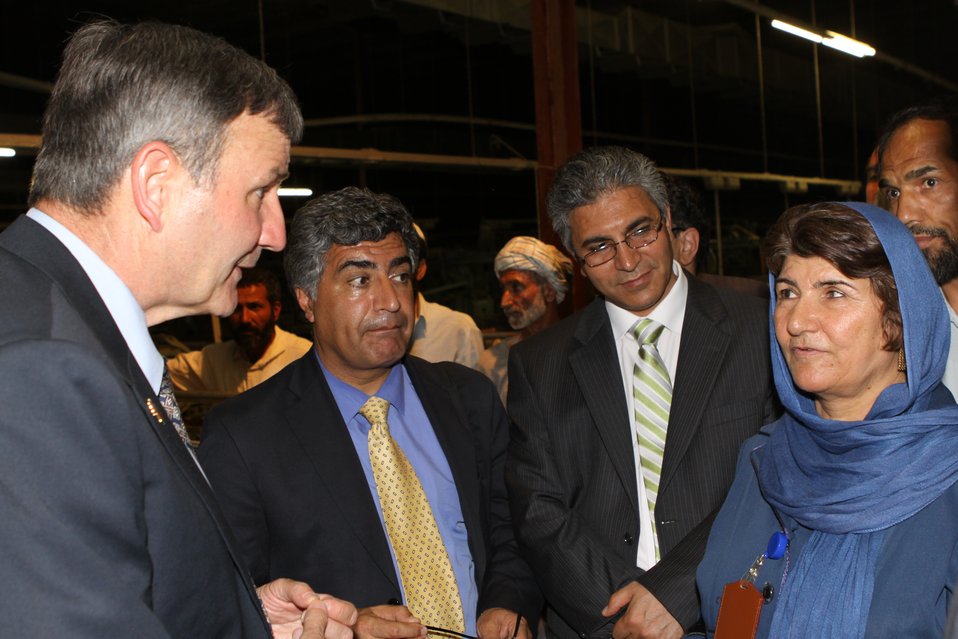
100525 Hirat Textile Company 768